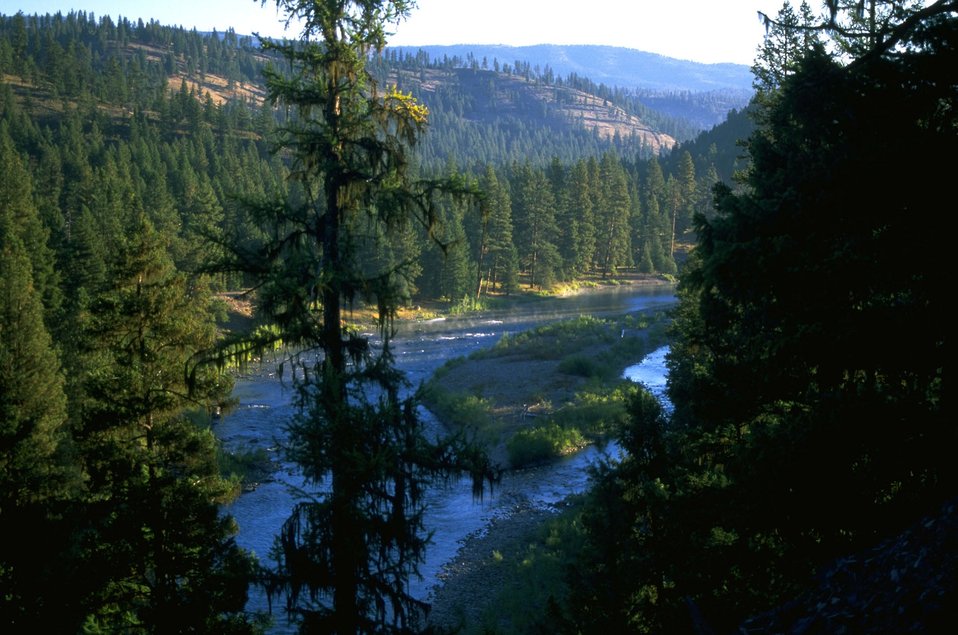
Early monrning on the Blackfoot River